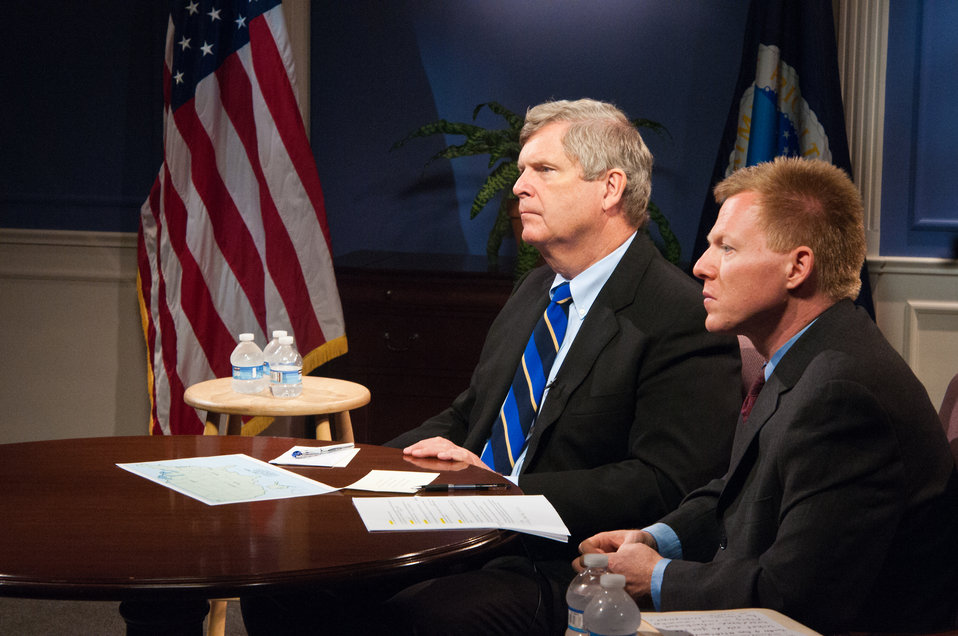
Agriculture Secretary Tom Vilsack and U.S. Department of Agriculture (USDA) StrikeForce Initiative Director Max Finberg listen to a panel of StrikeForce State coordinators, partners and program recipients who addressed frequently asked questions and provided guidance on how to be a part of the Initiative during a Google Hangout at USDA in Washington, D.C. on Monday, Jun. 17, 2013. The StrikeForce Initiative targets rural areas of persistent poverty where USDA staff can work with state, local and community officials to increase awareness of programs and services that help to promote economic development and job creation.